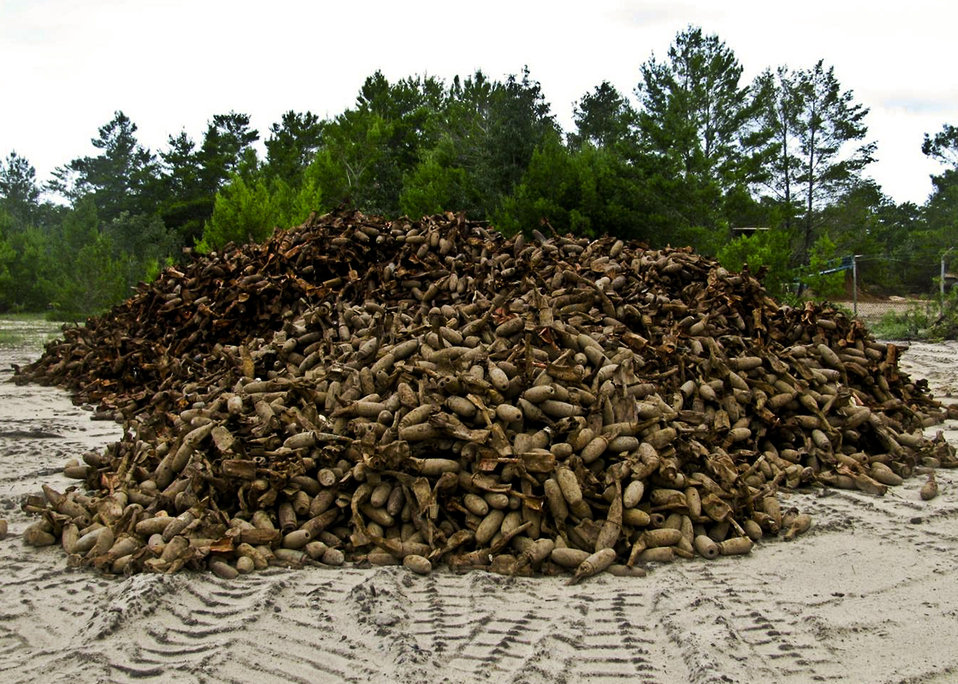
Recycling saves money

Discarded miniature practice bombs from Eglin Air Force Base, Fla., are piled at a commercial shredding facility near the base. The bombs will be fed into a shredder and the shredded material then will be recycled. To date, more than seven million pounds of range debris metal have been recycled, saving the government millions of dollars.